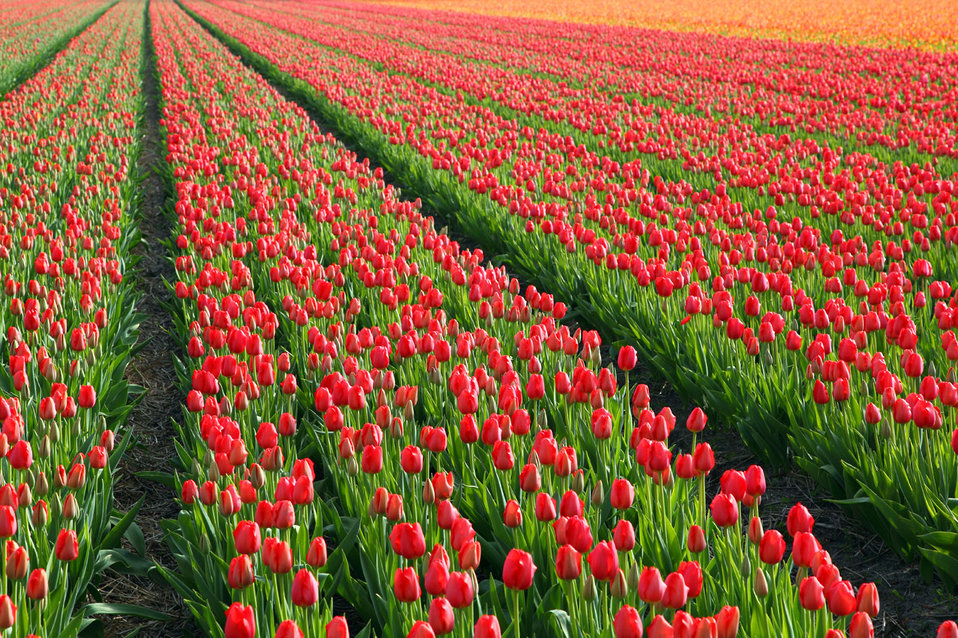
Red tulip field

Red and orange tulip fields in holland.